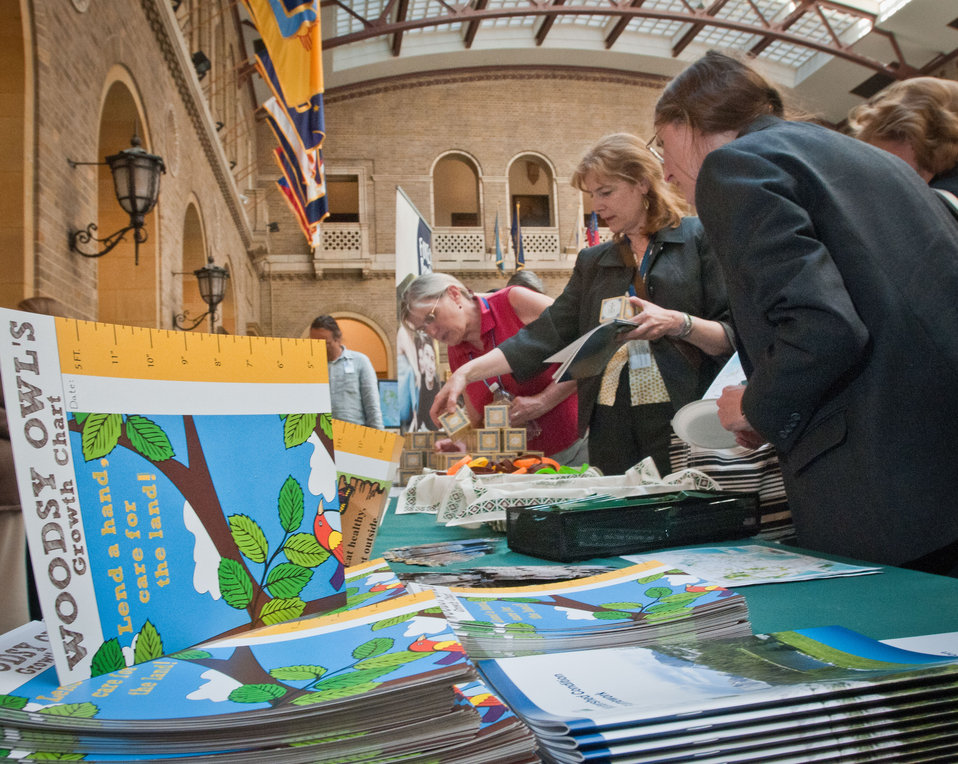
The Watershed Condition Framework publication and a Woodsy Owl's Growth Chart were some of the items available to guests at the International Year of Forests (IYOF) celebration on Friday, June 3, 2011 on the Patio of the Whitten Building, U.S.Department of Agriculture in Washington, DC.